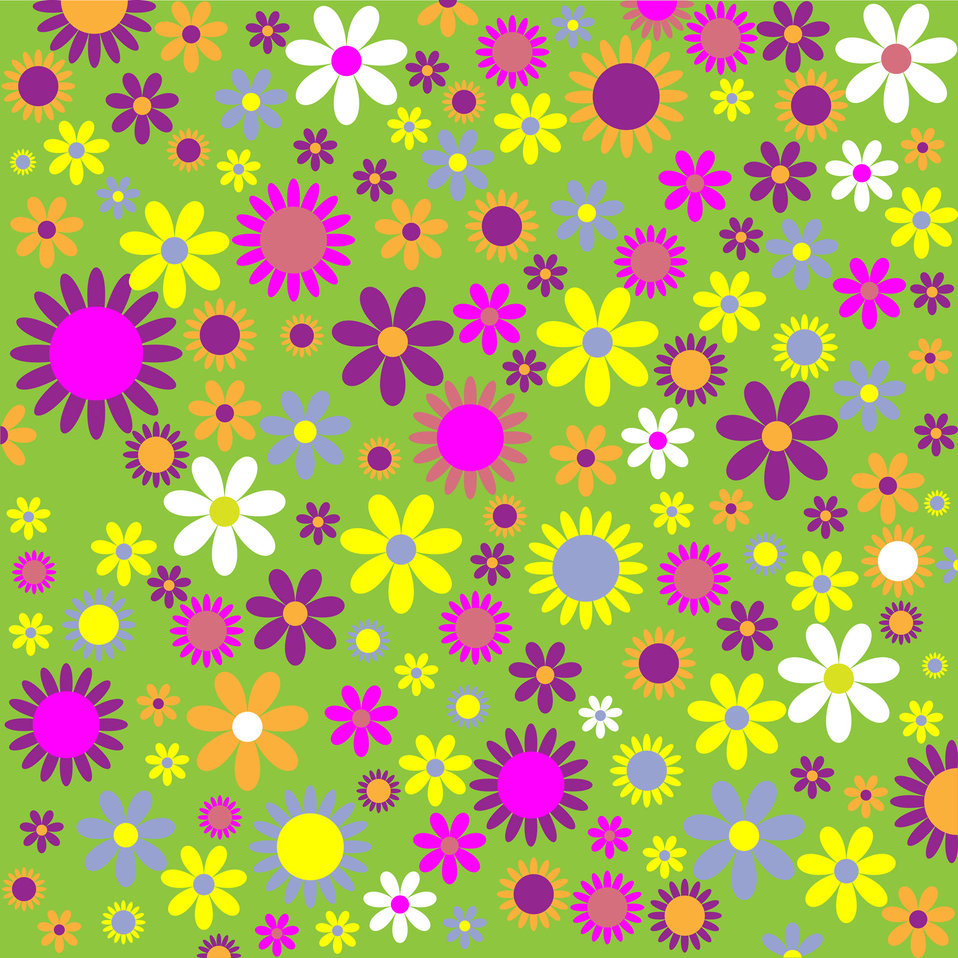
Floral flowers pattern colorful

Colorful floral flowers pattern background for scrapbooking.